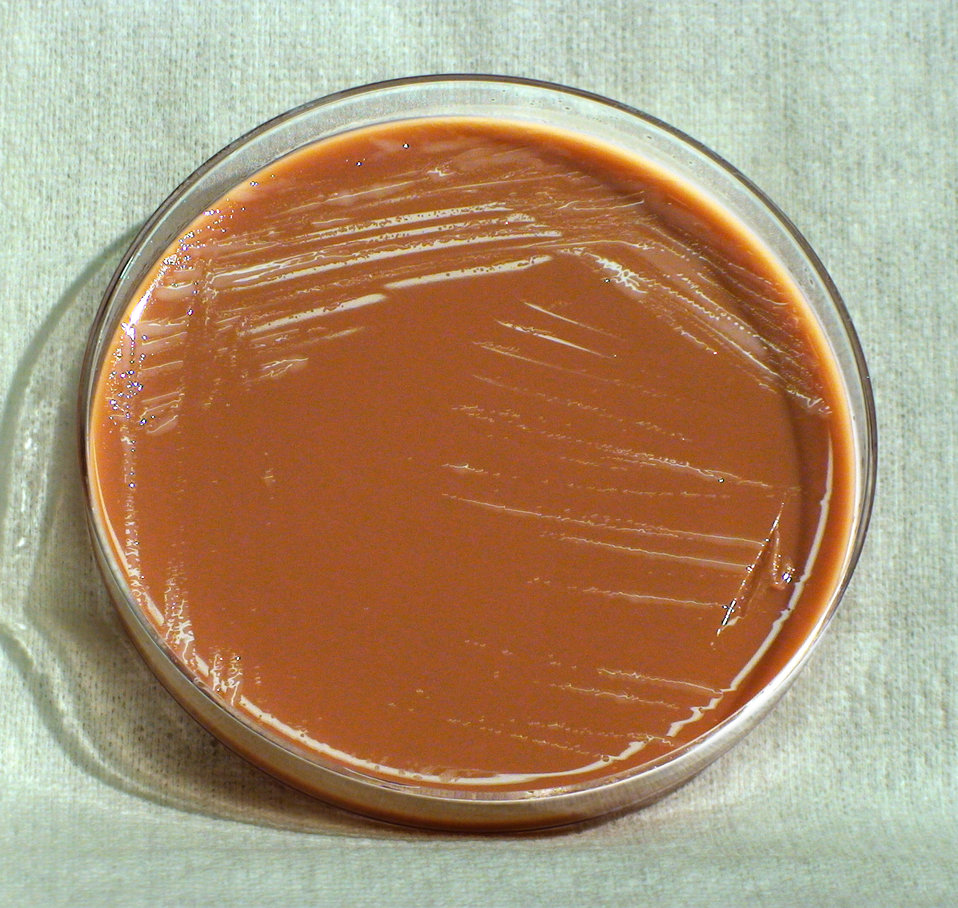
This photograph depicts the colonial morphology displayed by Gram-negative Francisella tularensis bacteria, which was grown on a medium of modified Thayer-Martin (MTM) agar, for a 72 hour time period, at a temperature of 37�C. Take a look at PHIL 12444 and 12445, which depict the appearance of F. tularensis colonies grown on the same medium, and at the same temperature, but for one-third the time (24hr). Also see PHIL 12446, for the appearance of bacterial colonies, again, grown on the same medium, and at the same temperature, but also, for a lesser time period (48hr). This bacterium is both an animal, and a human pathogen, and is responsible for causing the disease known as tularemia.